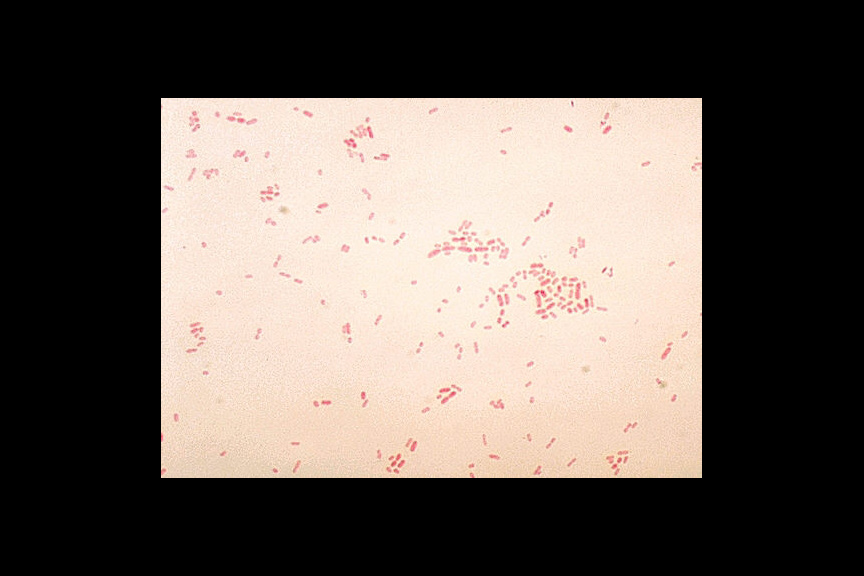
Alcaligenes odorans. Gram stain.